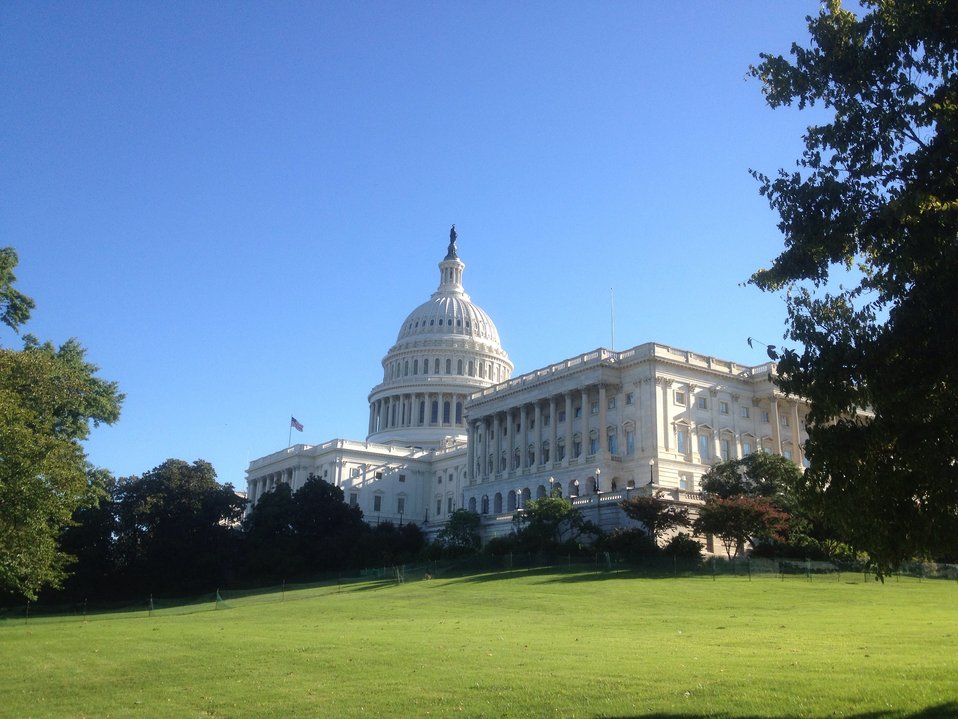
Perfect September morning at the Capitol.